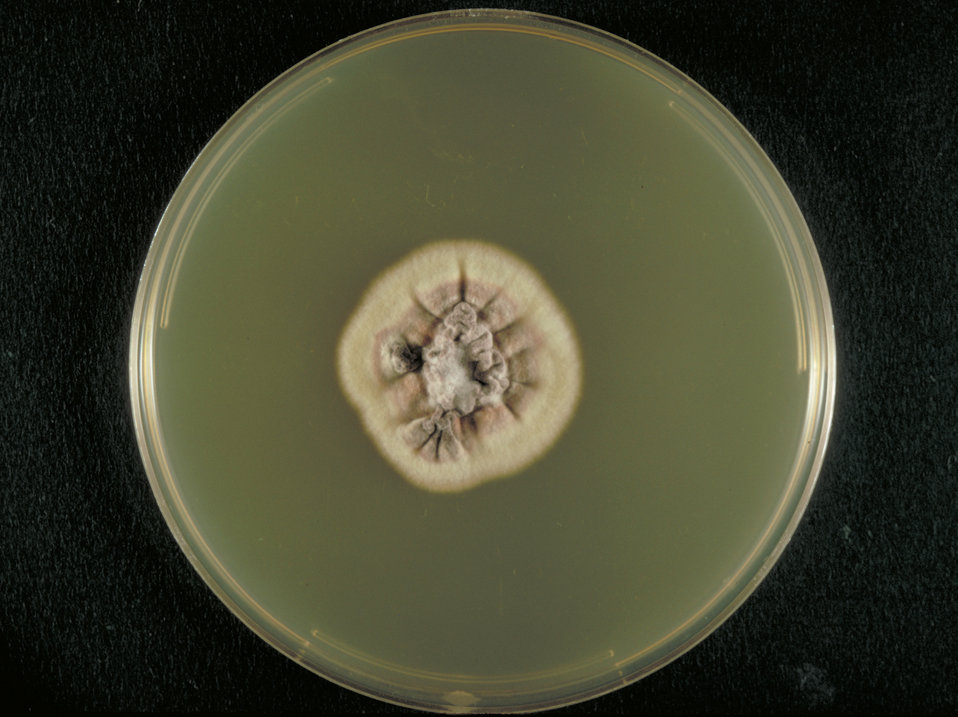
This is a top view of a Sabouraud's dextrose agar plate culture growing a Mexican isolate of T. rubrum var. rodhaini.